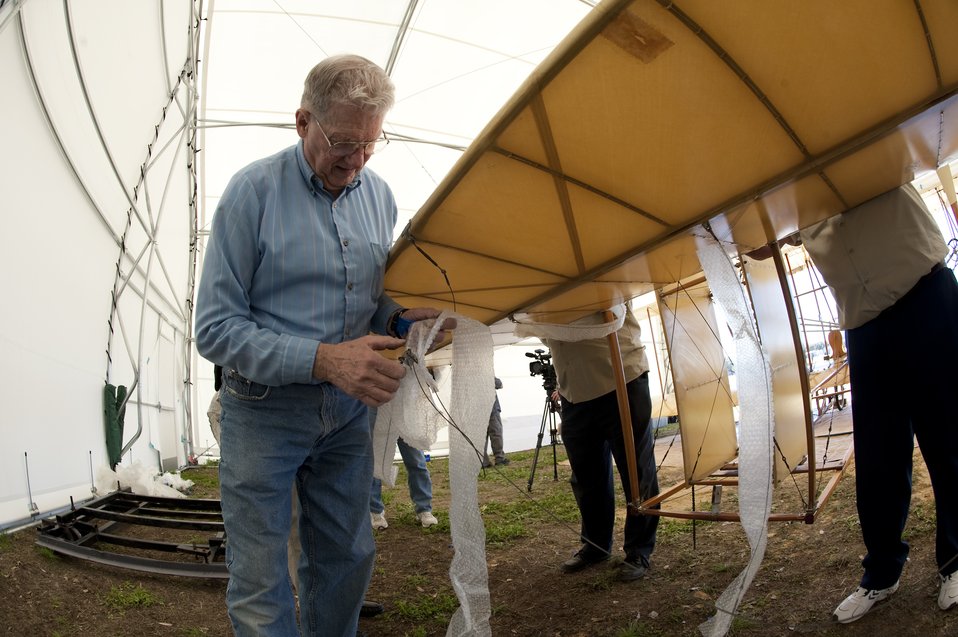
Wright

Frank Goepferich removes packing material from cable ends for the translucent horizontal stabilizer/elevator of one of the two Wright